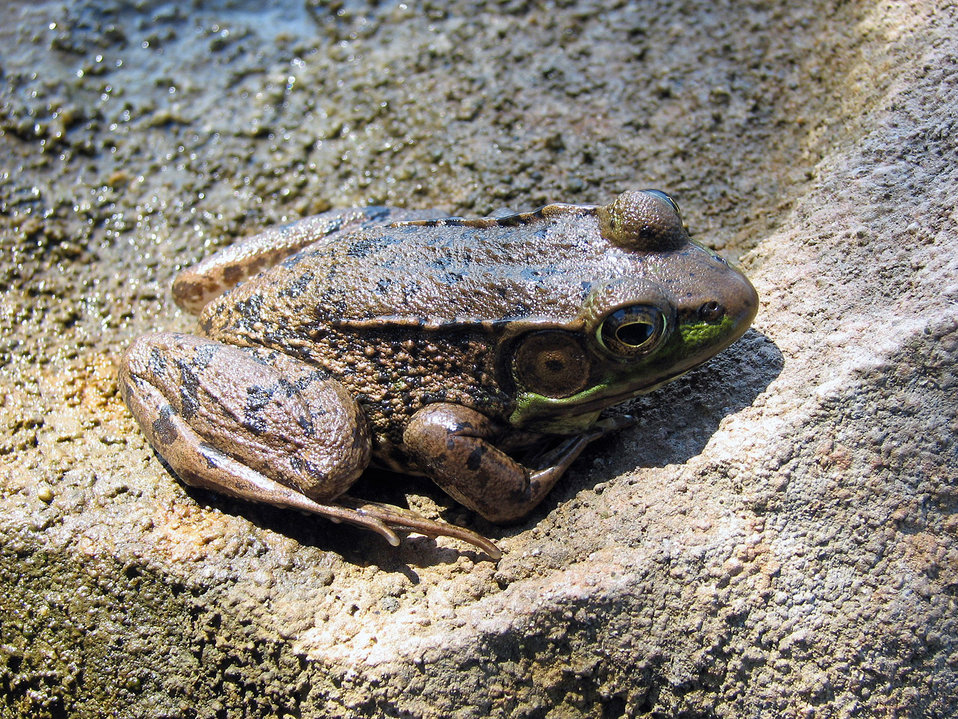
Frog on wet rock.